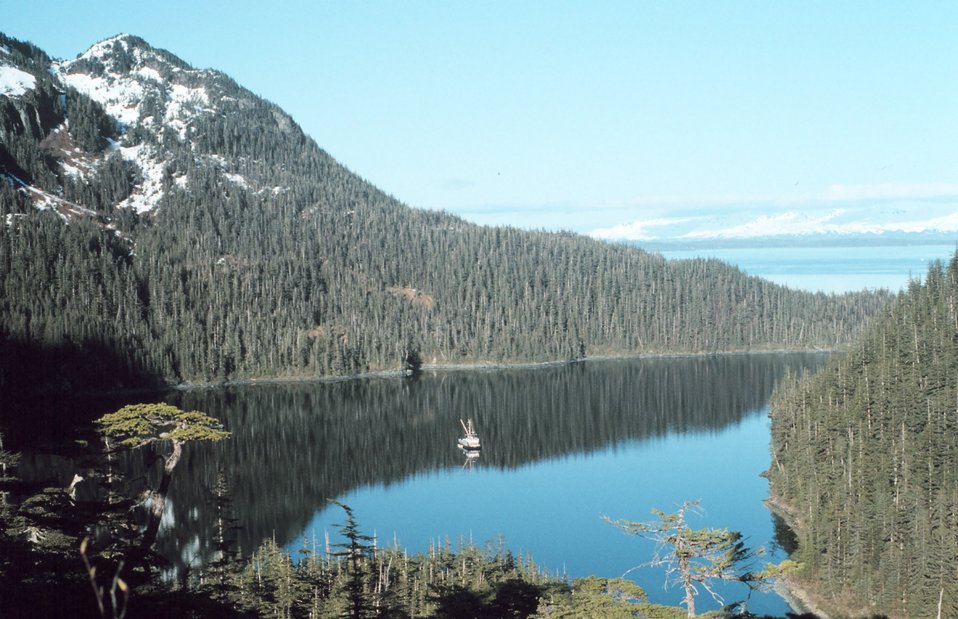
NOAA Ship MURRE II